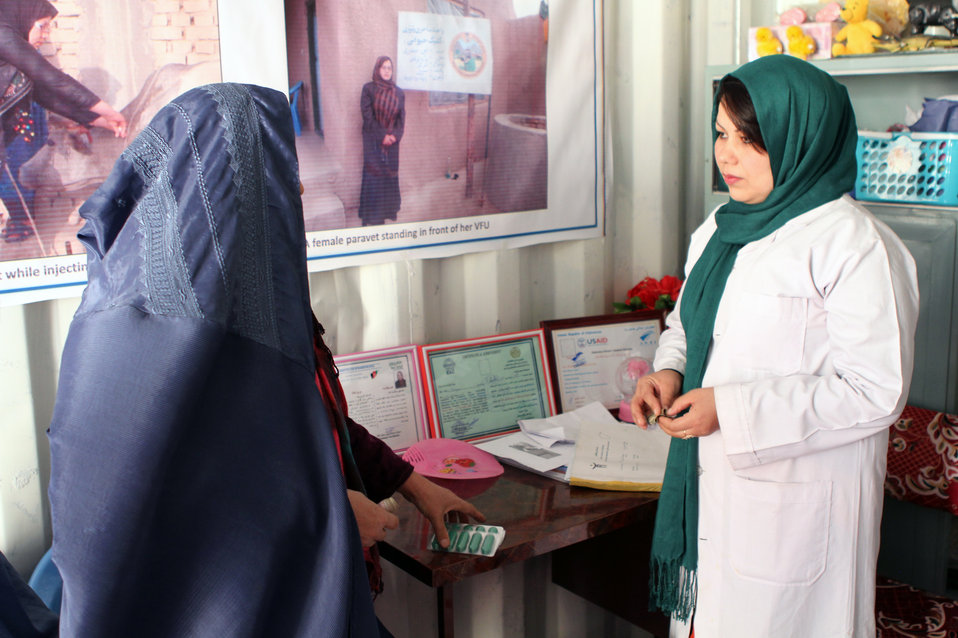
Development of Veterinary...